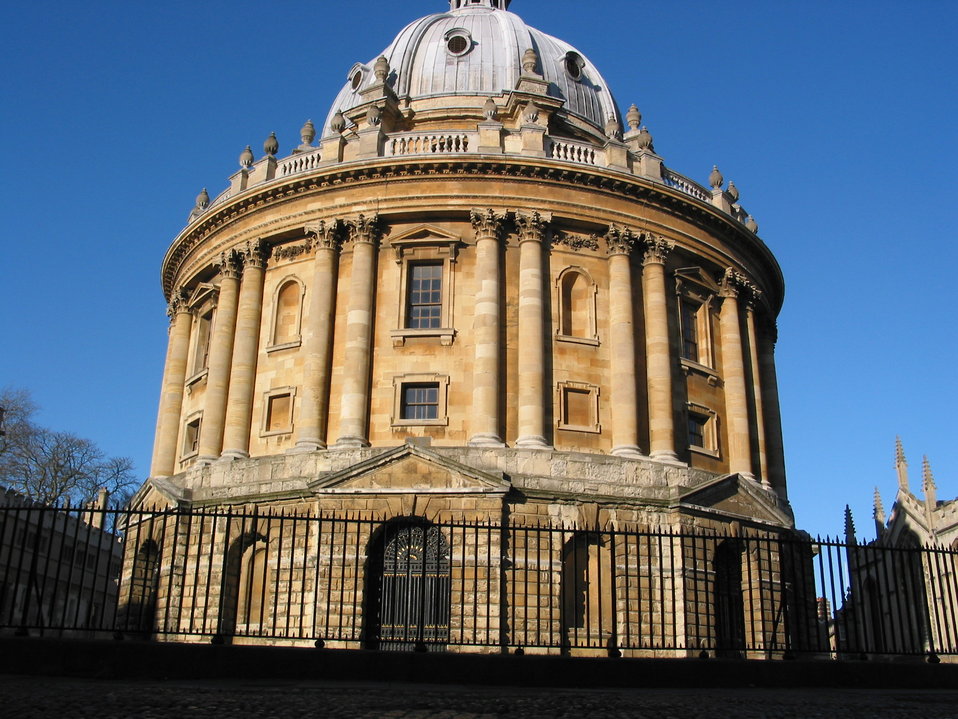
Deutsch: Radcliff Camera, Oxford